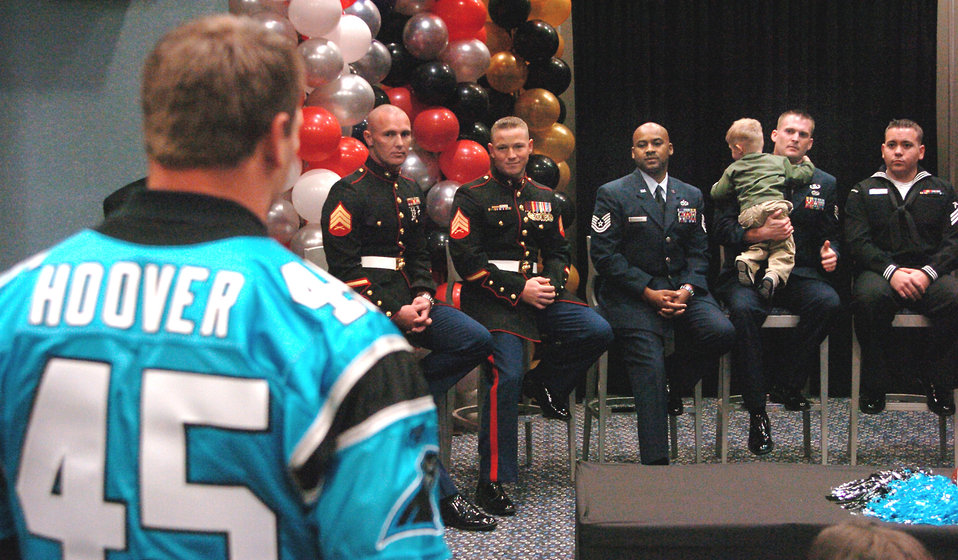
Operation Welcome Home

Carolina Panther Brad Hoover asks a question during Operation Welcome Home Oct. 24, about life after returning from serving in Iraq or Afghanistan. OWH, held in the Bank of America Stadium in Charlotte N.C., allowed military members from the Air Force, Army, Navy and Marines to tour the stadium and meet several players from the Carolina Panthers as a thank you after deploying in support or Operations Iraqi Freedom and Enduring Freedom.